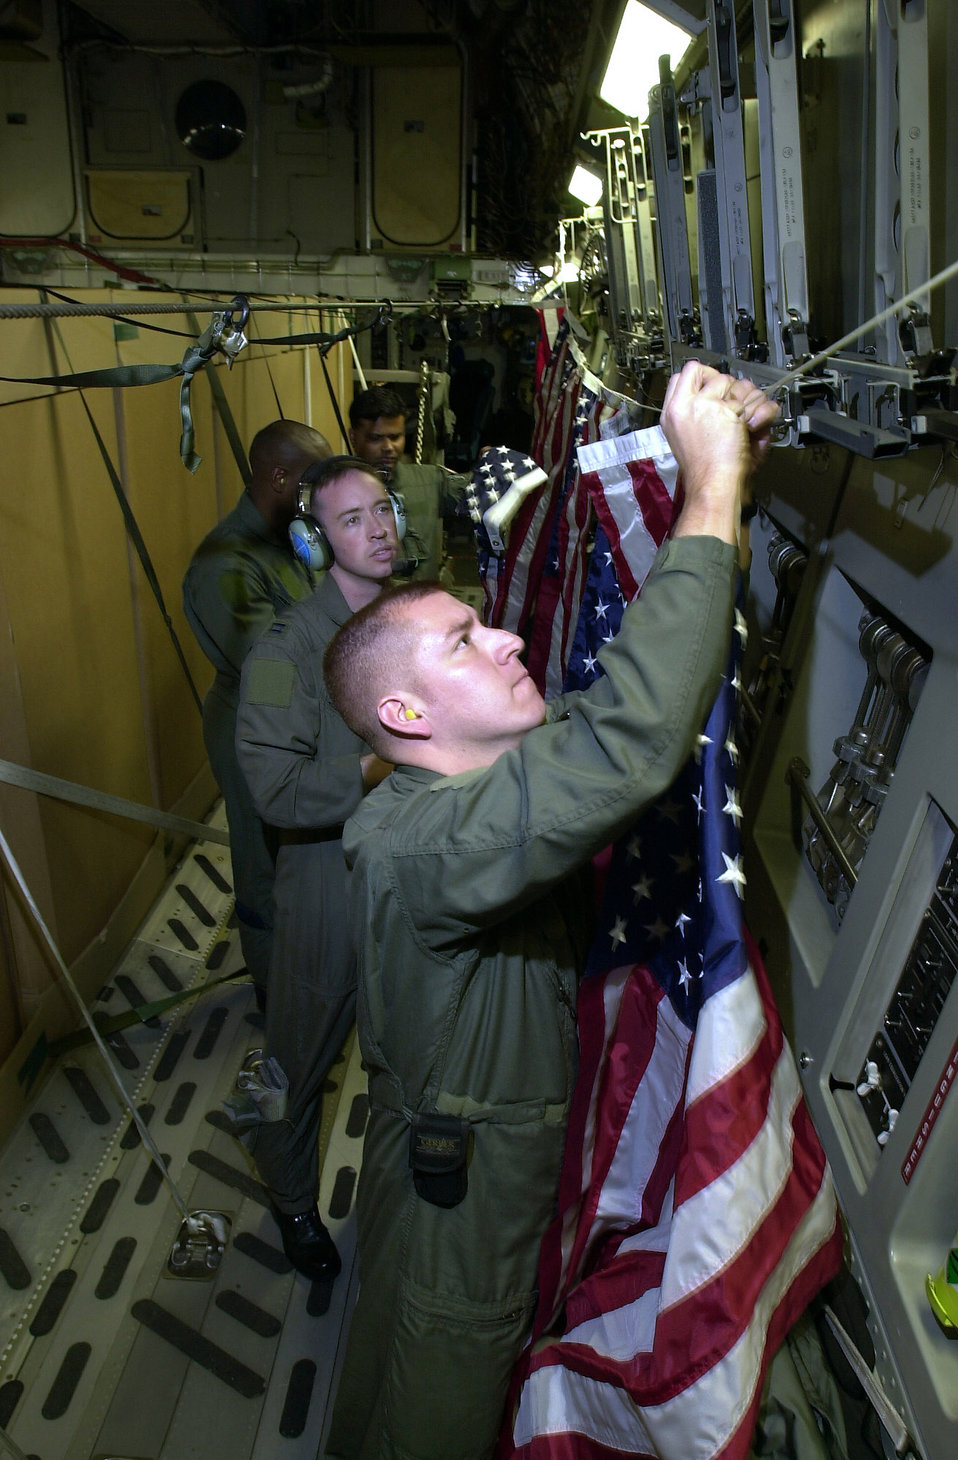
World Food Program

OPERATION ENDURING FREEDOM -- Capt. Jeffrey Fagan (left), a C-17A Globemaster III pilot and Staff Sgt. Rene Delarosa, a C-17 loadmaster, both from the 17th Airlift Squadron at Charleston Air Force Base, S.C., help hang American flags along the walls of their aircraft while en route to an airdrop location over Afghanistan in support of Operation Enduring Freedom on Nov. 30. In November, the World Food Program -- with U.S. assistance -- has delivered enough food to feed more than 4.3 million people.